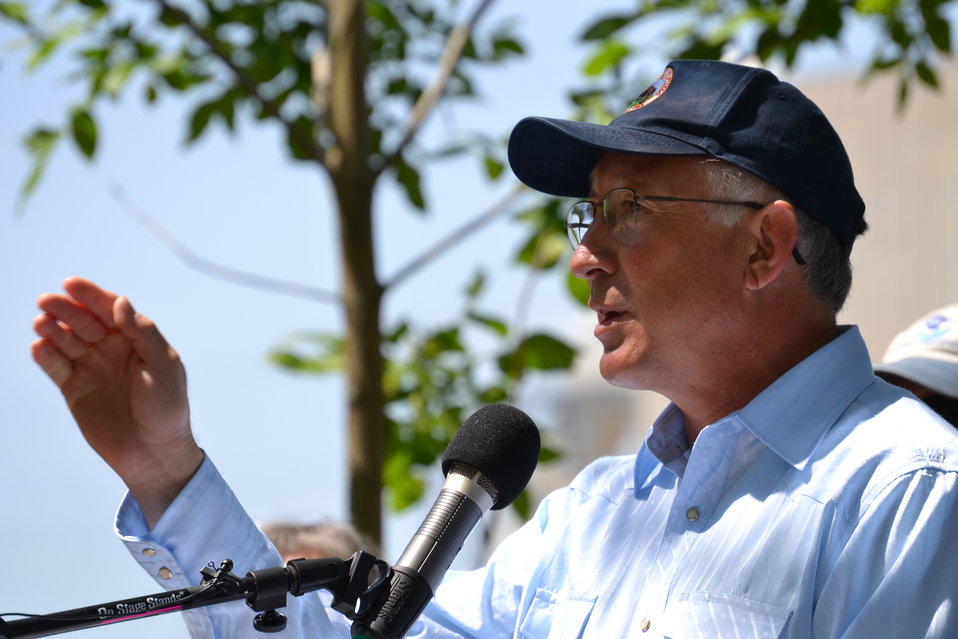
Department of the Interior Secretary Ken Salazar